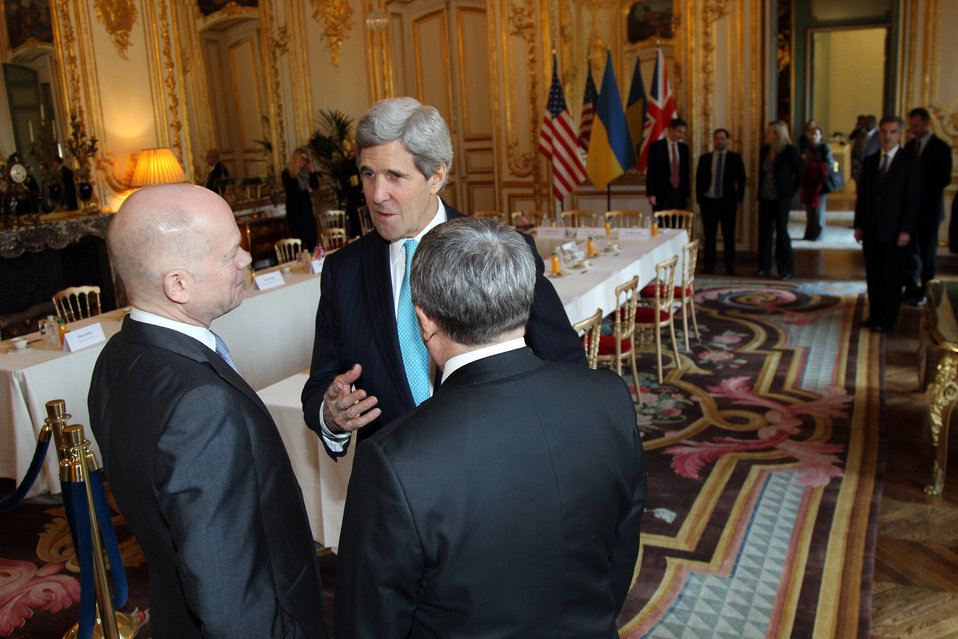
Secretary Kerry Speaks With UK Foreign Secretary Hague and Ukrainian Foreign Minister Deshchytsia

U.S. Secretary of State John Kerry speaks with British Foreign Secretary William Hague and Ukrainian Foreign Minister Andrii Deshchytsia after hosting the Budapest Memorandum Ministerial on the Ukraine crisis in Paris, France, on March 5, 2014.